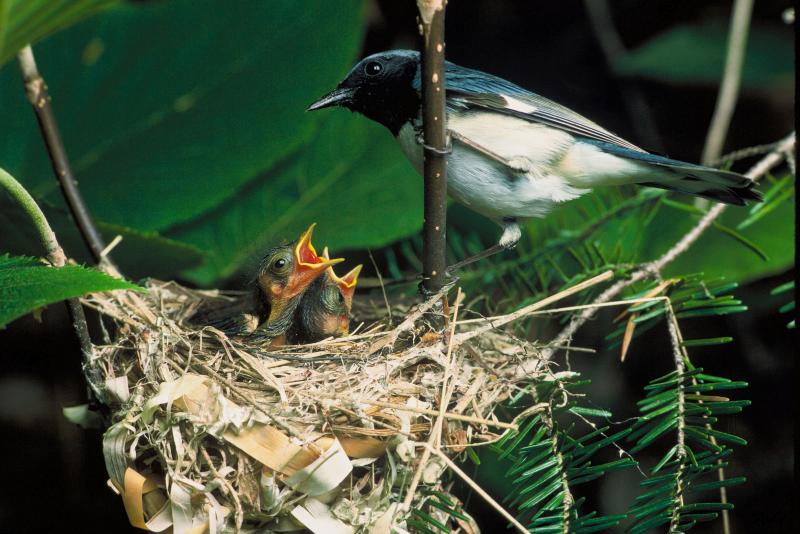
black-throated blue warbler